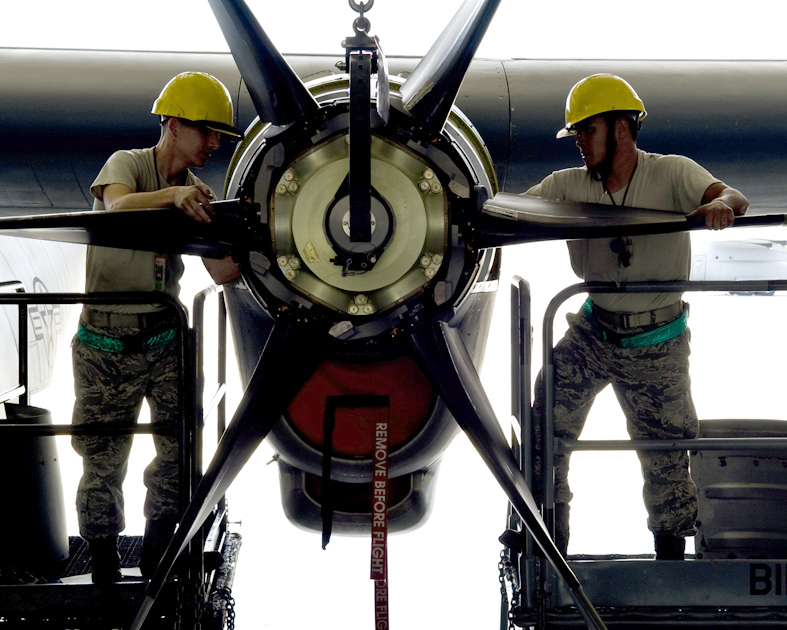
You pull here

Staff Sgt. Ramiro Gonzalez (left) and Tech. Sgt. Bryan Campbell remove a damaged propeller from a C-130J Hercules Aug. 19, 2010, at Ramstein Air Base, Germany.